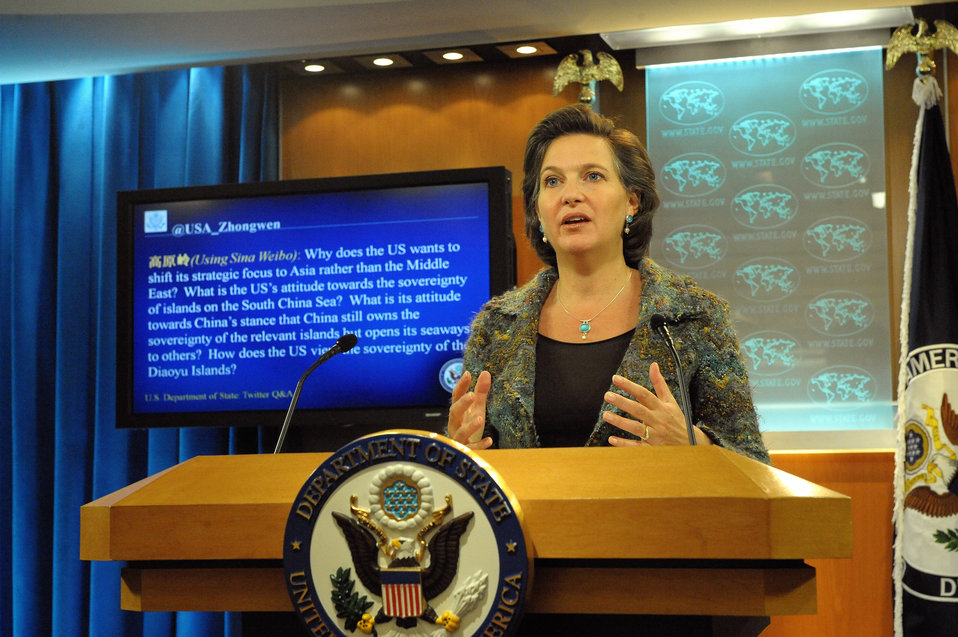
Spokesperson Nuland Responds to a Question from @USA Zhongwen

Victoria Nuland, Spokesperson for the U.S. Department of State, answers a question selected from the Department’s official Chinese Twitter feed, @USA Zhongwen, on January 13, 2012.